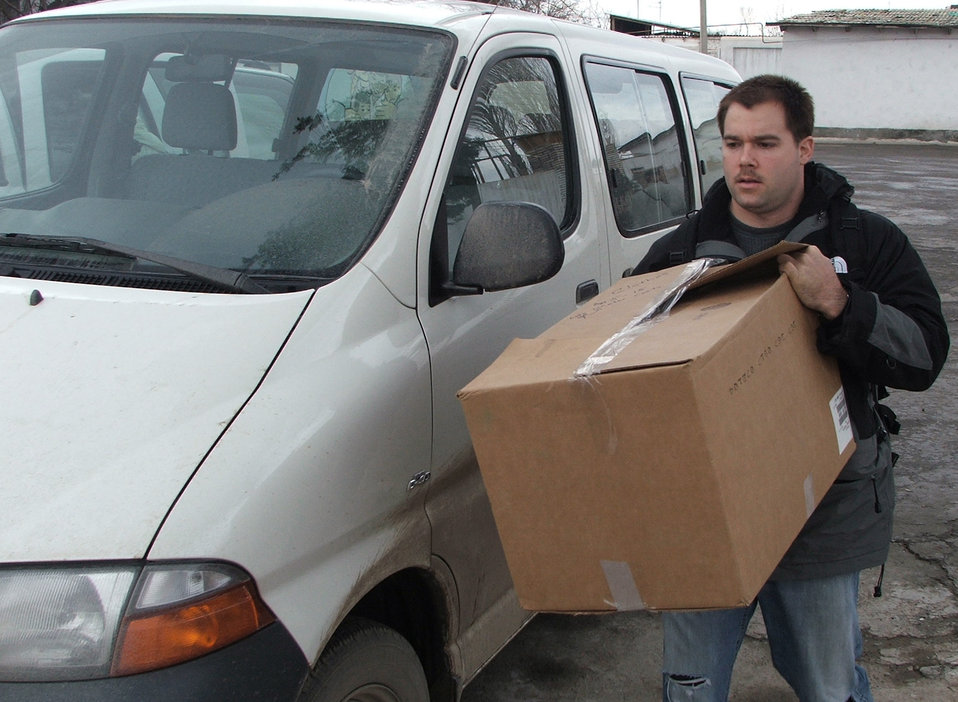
Airmen help bring donations to Uzbek orphanages

KARSHI, Uzbekistan -- First Lt. Steven Lawhun carries a box of donated clothing and shoes to an orphanage here Jan. 22. Visits like these are part of an ongoing humanitarian assistance program to Uzbek orphanages. Lieutenant Lawhun is deployed to the 416th Air Expeditionary Group at nearby Karshi-Khanabad Air Base. He is from Moody Air Force Base, Ga.